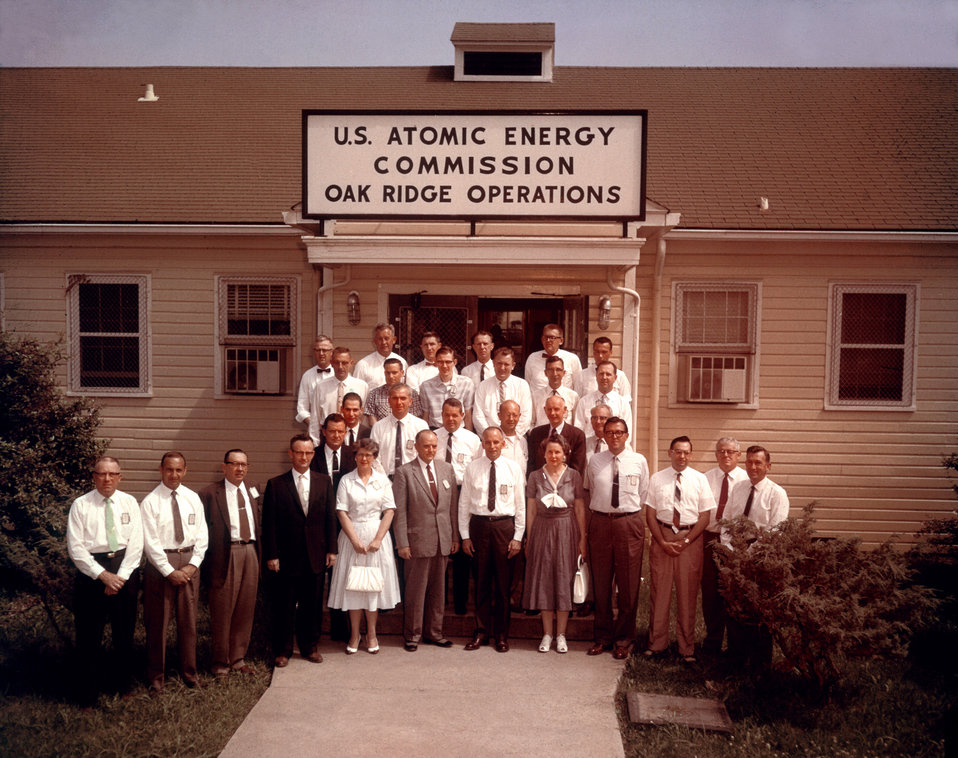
AEC Group Photo Oak Ridge

DOE Photo by Ed Westcott Oak Ridge Tennessee July 1950